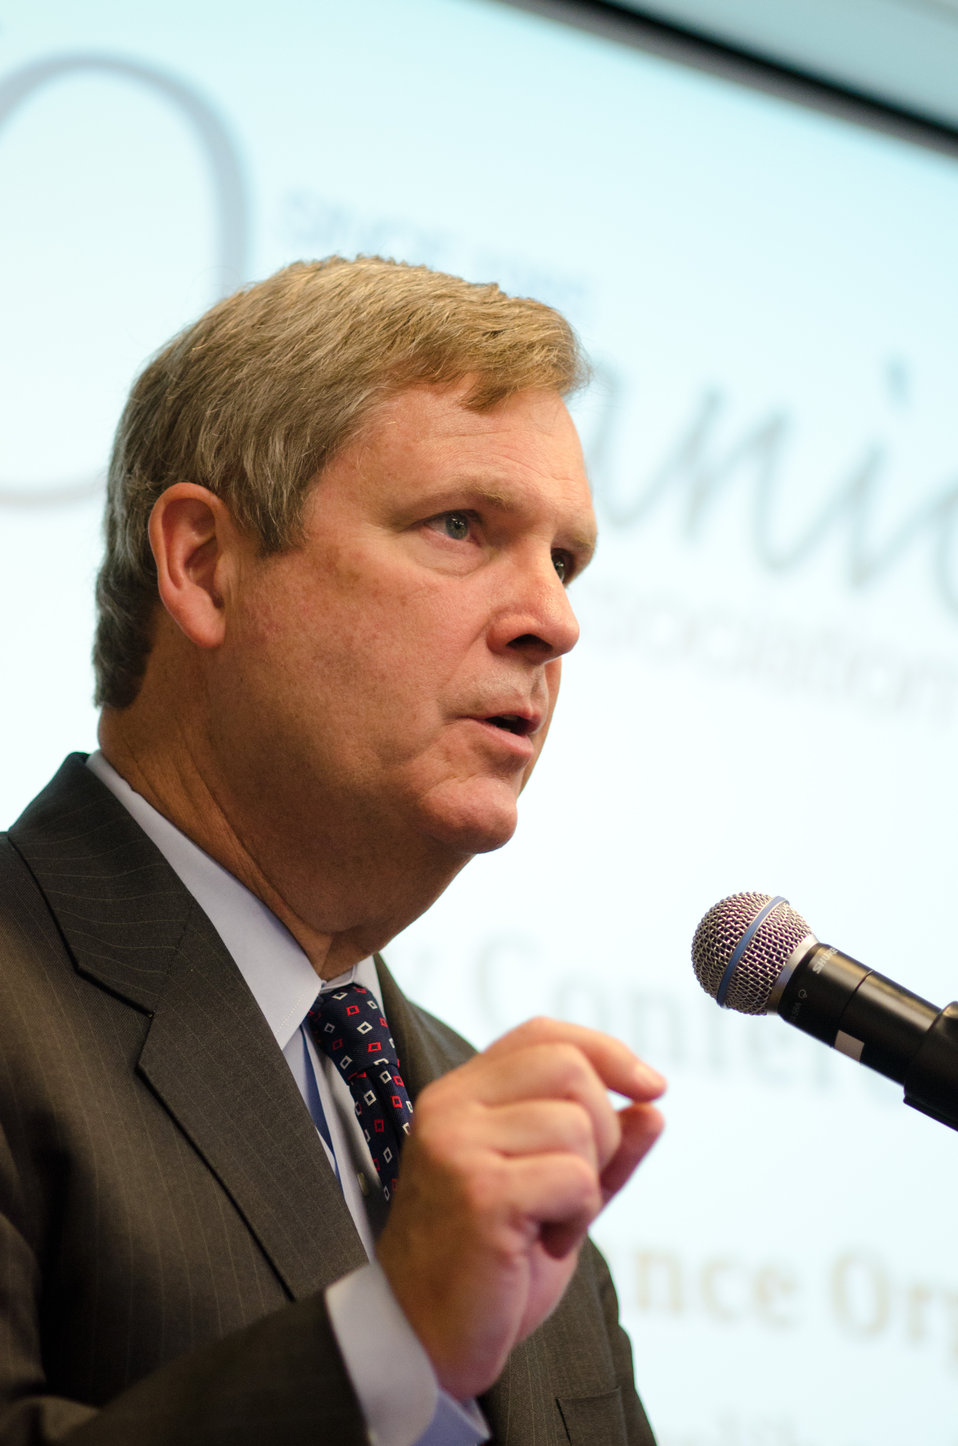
U.S. Department of Agriculture Secretary Tom Vilsack spoke at the Organic Trade Association’s 2011 Policy Conference at the Hall of States, on Wednesday, April 6, 2011 in Washington, DC. One of the factors he mentioned about standards and labeling was that science and technology discovers increasingly precise and detailed ways to measure the content of food.